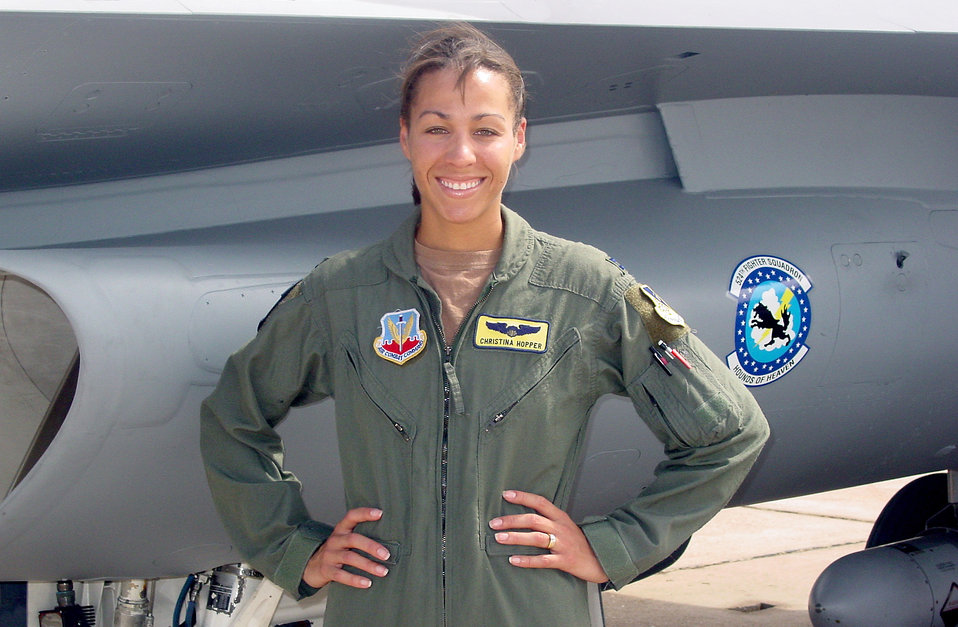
Good housekeeping

CANNON AIR FORCE BASE, N.M. -- Capt. Christina Hopper poses in front of an F-16 Fighting Falcon here. She won Good Housekeeping magazine's Woman in Government Award for 2003 and will be featured in the magazine's July edition. Captain Hopper is a pilot assigned to the 524th Fighter Squadron.